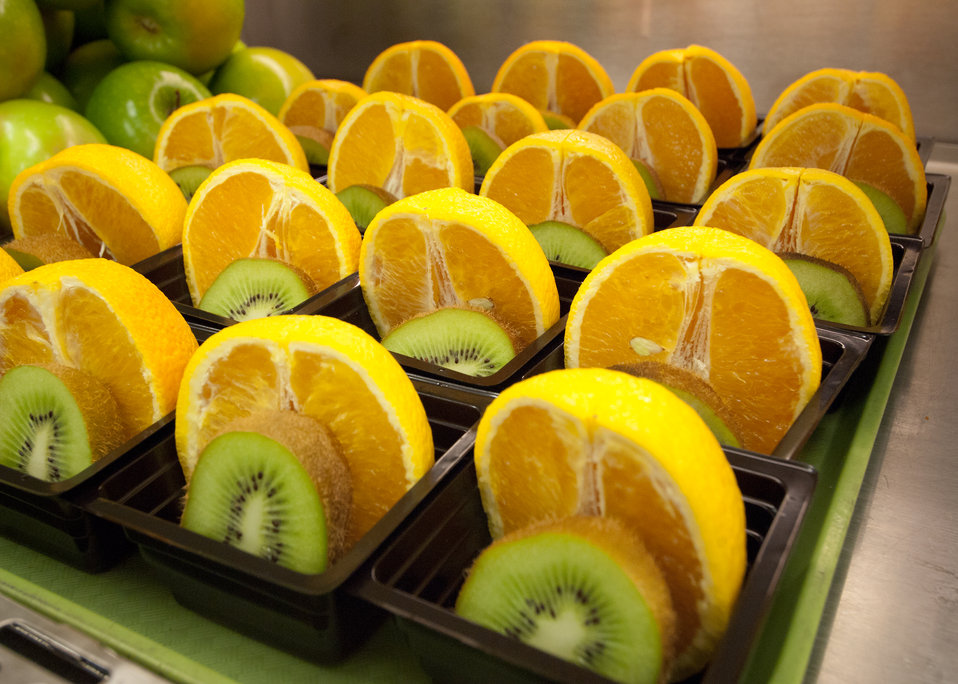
Fresh orange and kiwi fruit cups for the National School, Breakfast Program, for students at Washington-Lee High School in Arlington, Virginia, on Wednesday, October 19, 2011. The School Breakfast Program a federally assisted meal program administered by the United States Department of Agriculture, Food and Nutrition Service provides cash assistance to States to operate nonprofit breakfast programs in public, nonprofit private schools and residential child care institutions. The program is administered at the Federal level by USDA, FNS. State education agencies administer the SBP at the State level, and local school food authorities operate it in schools.